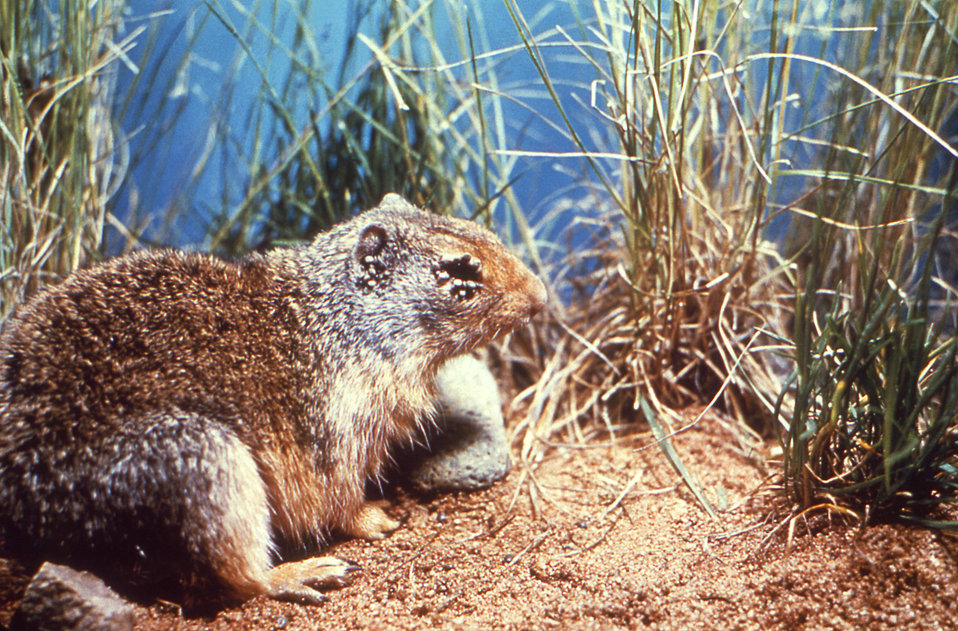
As one of the primary natural hosts to the Rocky Mountain wood tick, Dermacentor andersoni (see PHIL 10865), this Columbian ground squirrel, Urocitellus columbianus, was infested by numerous nymphal-staged D. andersoni ticks. You can see these ticks obtaining their blood meal from this host, as they nestled around the animal's right eye and ear. D. andersoni is the vector responsible for transmitting the Coltivirus, Colorado tick fever (CTF) to humans.